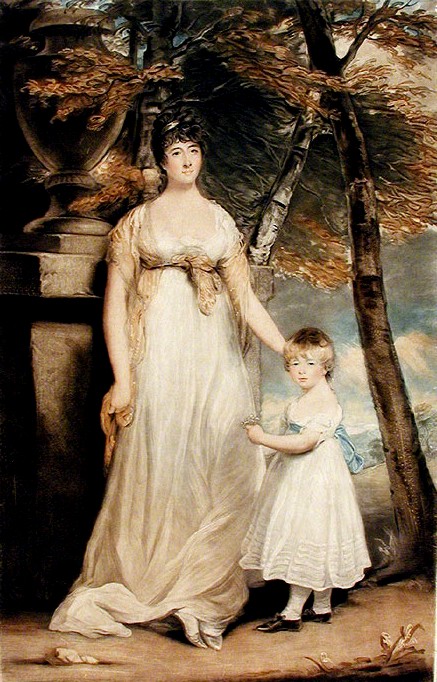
Charles Turner04